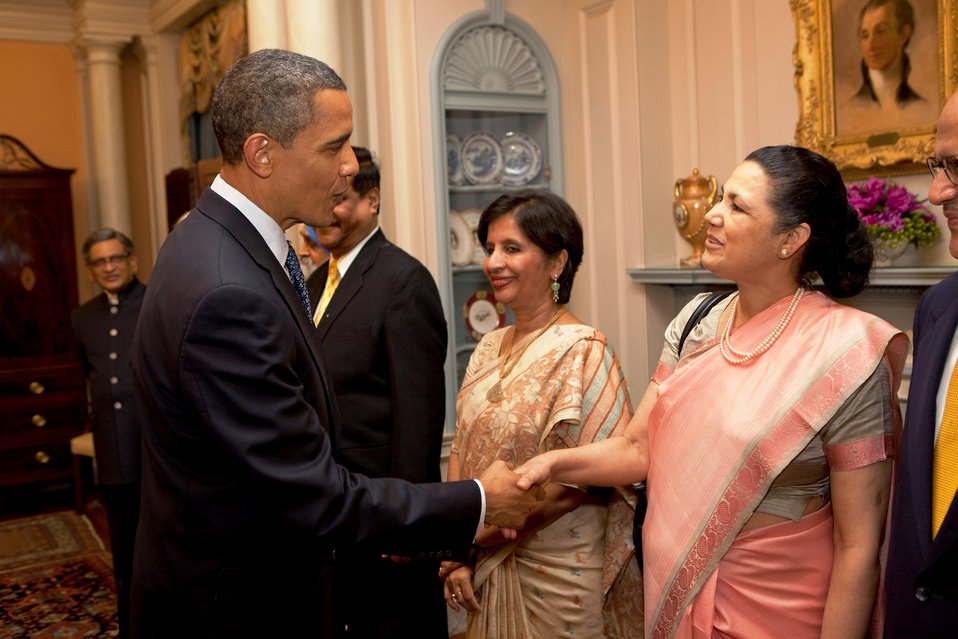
President Obama Shakes Hands With High-Ranking Indian Delegation Member

U.S. President Barack Obama shakes hands with a high-ranking member of the Indian Delegation at the U.S.-India Strategic Dialogue reception at the U.S. Department of State in Washington, D.C., on June 3, 2010.